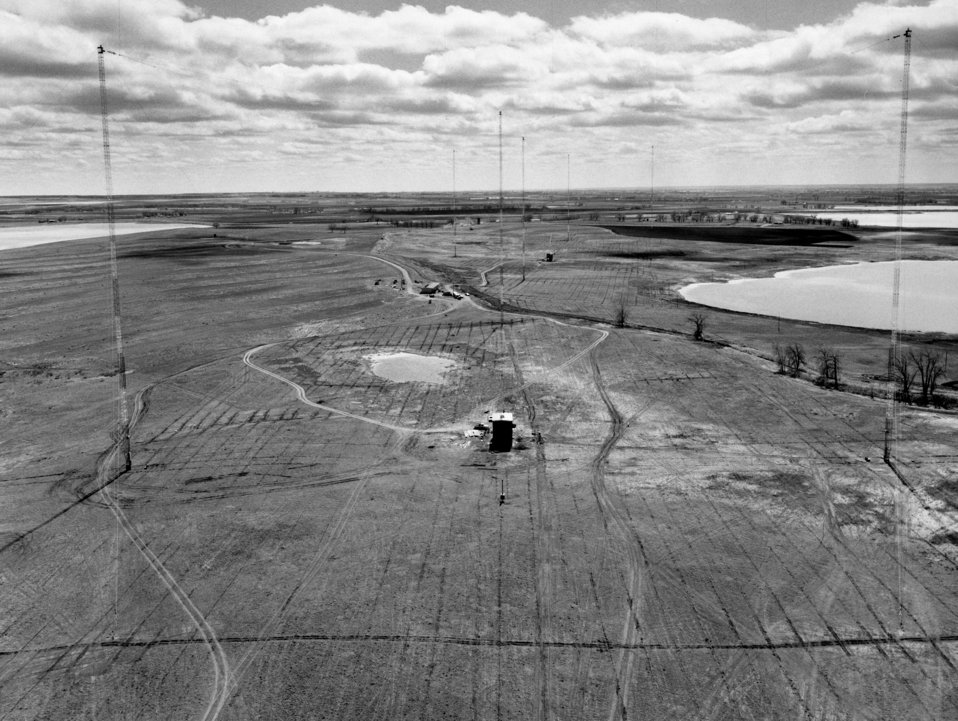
WWVB Antenna

This 1963 photo of NIST's then-new radio station in Fort Collins, Colo., was taken from one of four towers supporting an antenna. The small building in the foreground is the helix house, which contained equipment to electrically match the station's transmitter to the antenna.